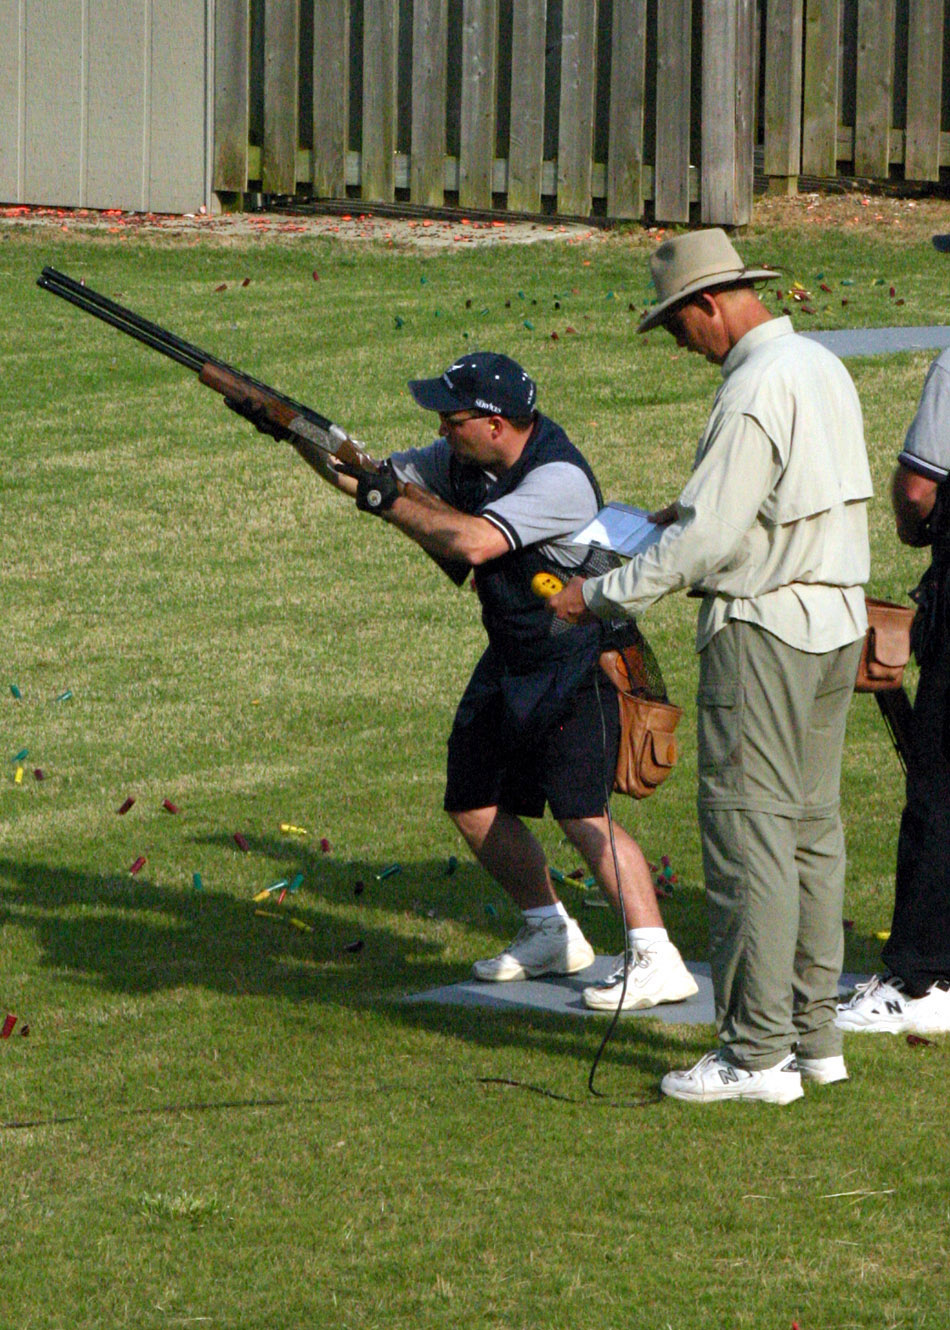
Skeet shooter

SAN ANTONIO -- Master Sgt. John Barnes takes aim during the Armed Services Skeet Championship in May. The Malmstrom Air Force Base, Mt., Airman is the 2005 Armed Forces Skeet Associations Hall of Fame Inductee. His team placed first overall.